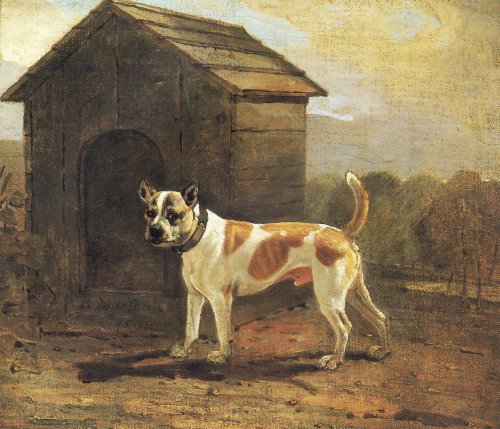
Benjamin Marshall - Dustman - Bulldog and Terrier Mix